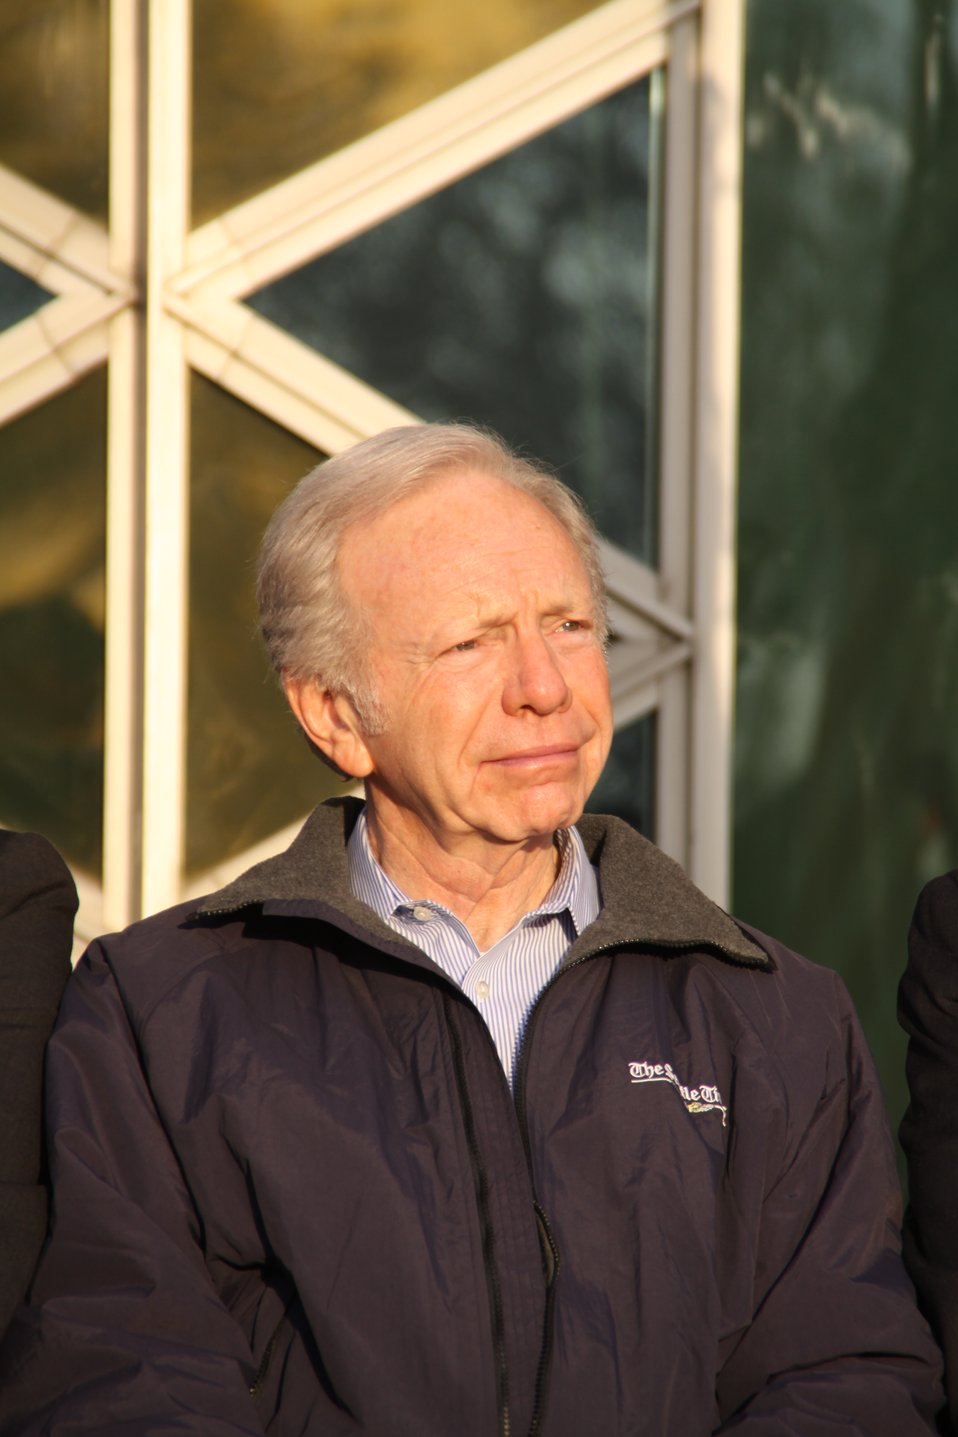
Senator Lieberman